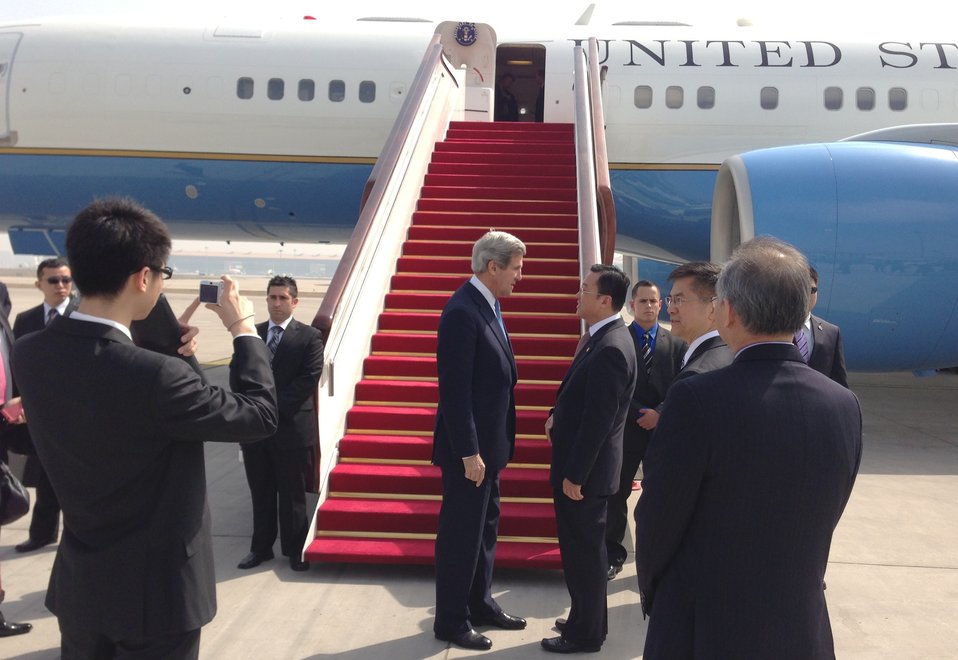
Secretary Kerry Arrives in Beijing

U.S. Secretary of State John Kerry is greeted by Xie Feng, China's Director General of the Ministry of Foreign Affairs for North America, upon his arrival in Beijing, China, on April 13, 2013.